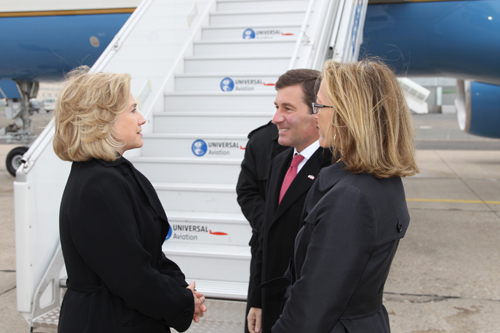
Secretary Clinton Bids Farewell to Ambassador Rivkin and His Wife, Mrs. Tolson

U.S. Secretary of State Hillary Rodham Clinton bids farewell to U.S. Ambassador to France, Charles H. Rivkin, and his wife, Mrs. Tolson, at Le Bourget Airport in Paris, France, on March 15, 2011.